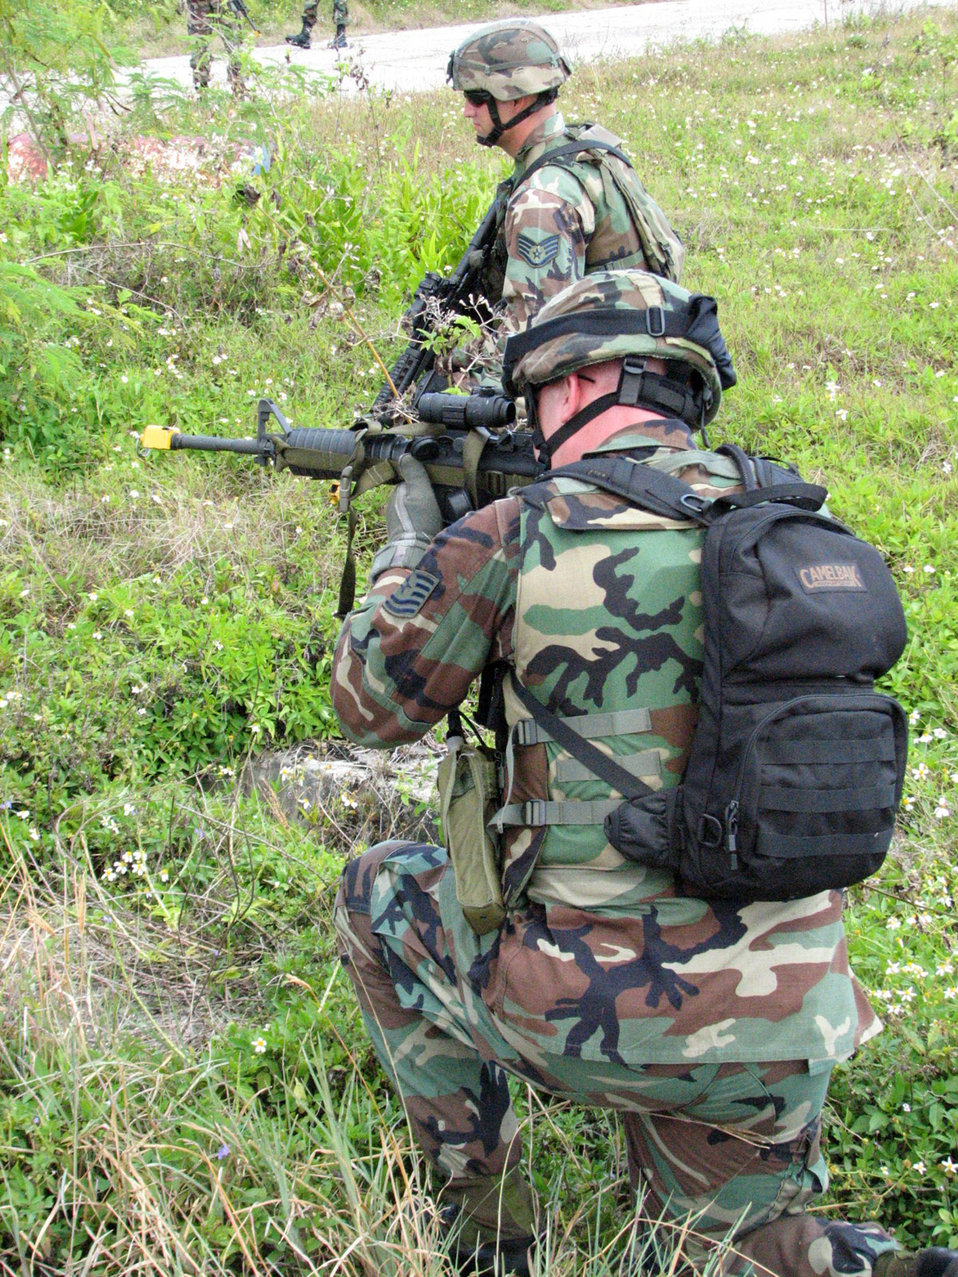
Anderson Airmen hone combat skills

An Airman peers down the sight of his M4 rifle Feb. 26 during training at Andersen Air Force Base, Guam,. Airmen from the 36th Contingency Response Group participated in a series of battle drills to hone their combat skills.